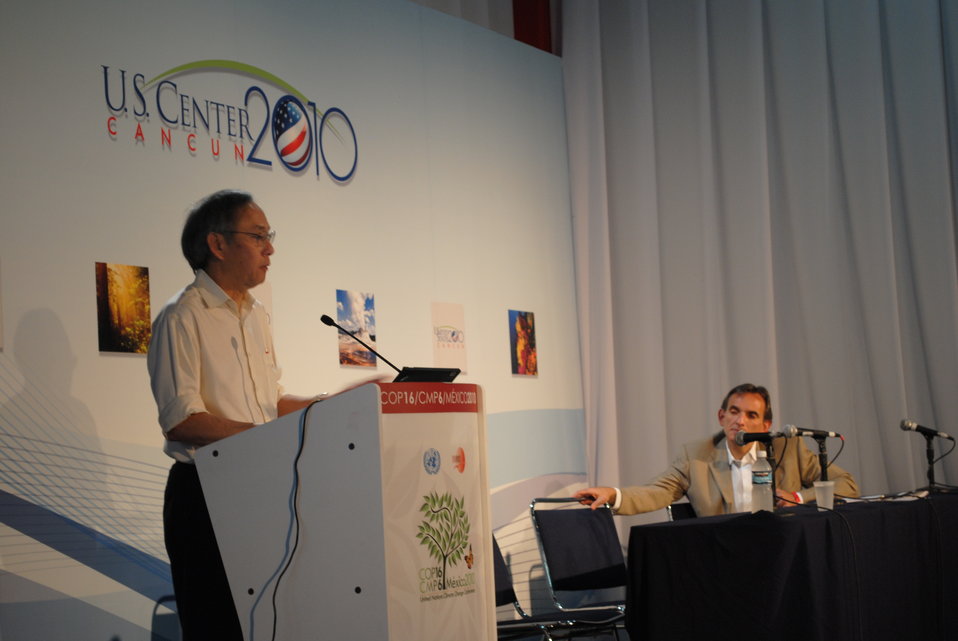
Secretary Chu Addresses the U.S. Center

U.S. Secretary of Energy Steven Chu addresses the U.S. Center at COP-16 in Cancun, Mexico, on December 6, 2010. U.S. Ambassador to Mexico Carlos Pascual is sitting to Secretary Chu's left.